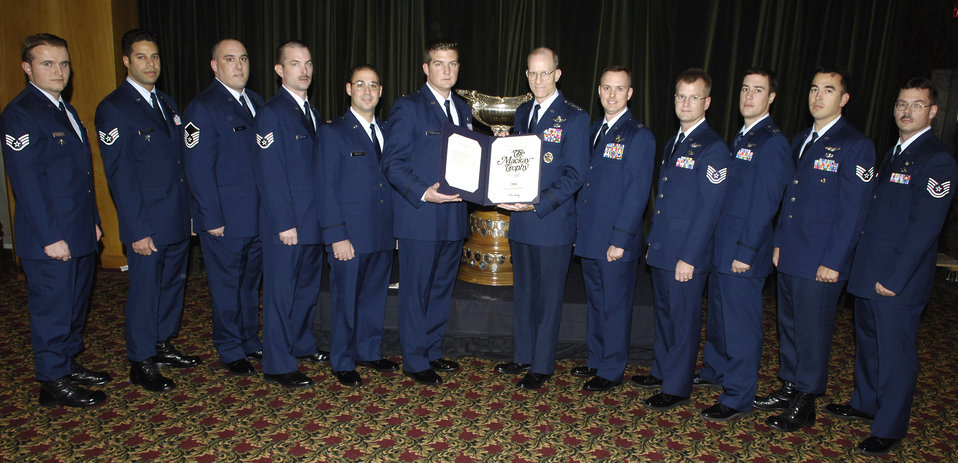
Mackay winners

ARLINGTON, Va. (AFPN) - Gen. John D. W. Corley, the Air Force vice chief of staff, (center right) presents the Mackay Trophy to the Airmen who rescued five Soldiers after their helicopter crashed in Iraq. They are (left to right) Staff Sgt. Vincent J. Eckert, Staff Sgt. John Griffin, Master Sgt. Paul Silver, Staff Sgt. Patrick Ledbetter, Maj. Joseph Galletti, Capt. Robert Wrinkle, Capt. Greg Rockwood, Tech. Sgt. Michael Preston, Capt. Bryan Creel, Staff Sgt. Michael Rubio and Tech. Sgt. Thomas Ringheimer. Not present at the ceremony were Tech. Sgt. Matt Leigh and Senior Airman Edward Ha.